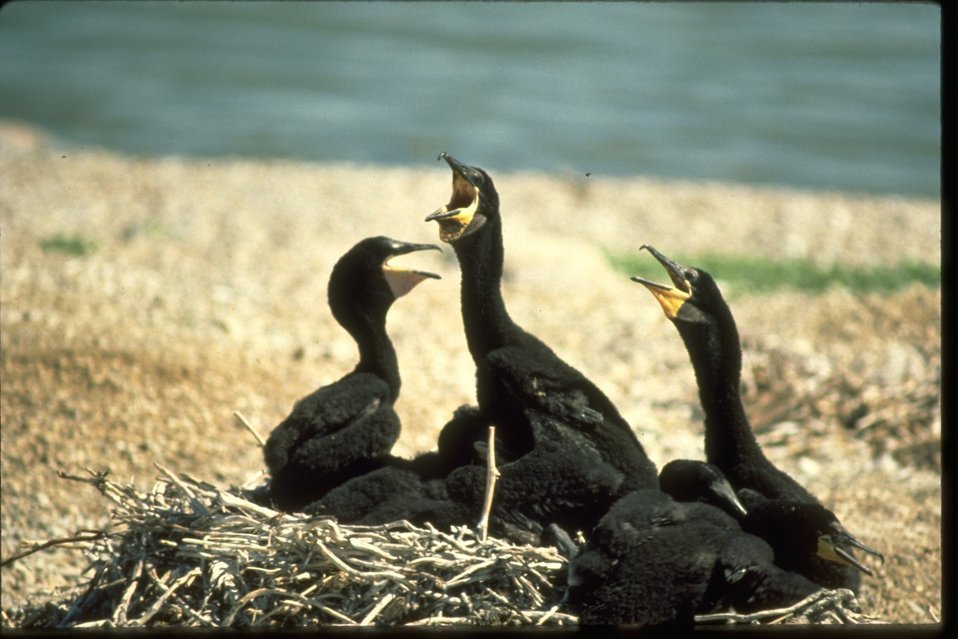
Double-crested Cormorants sitting in nest.